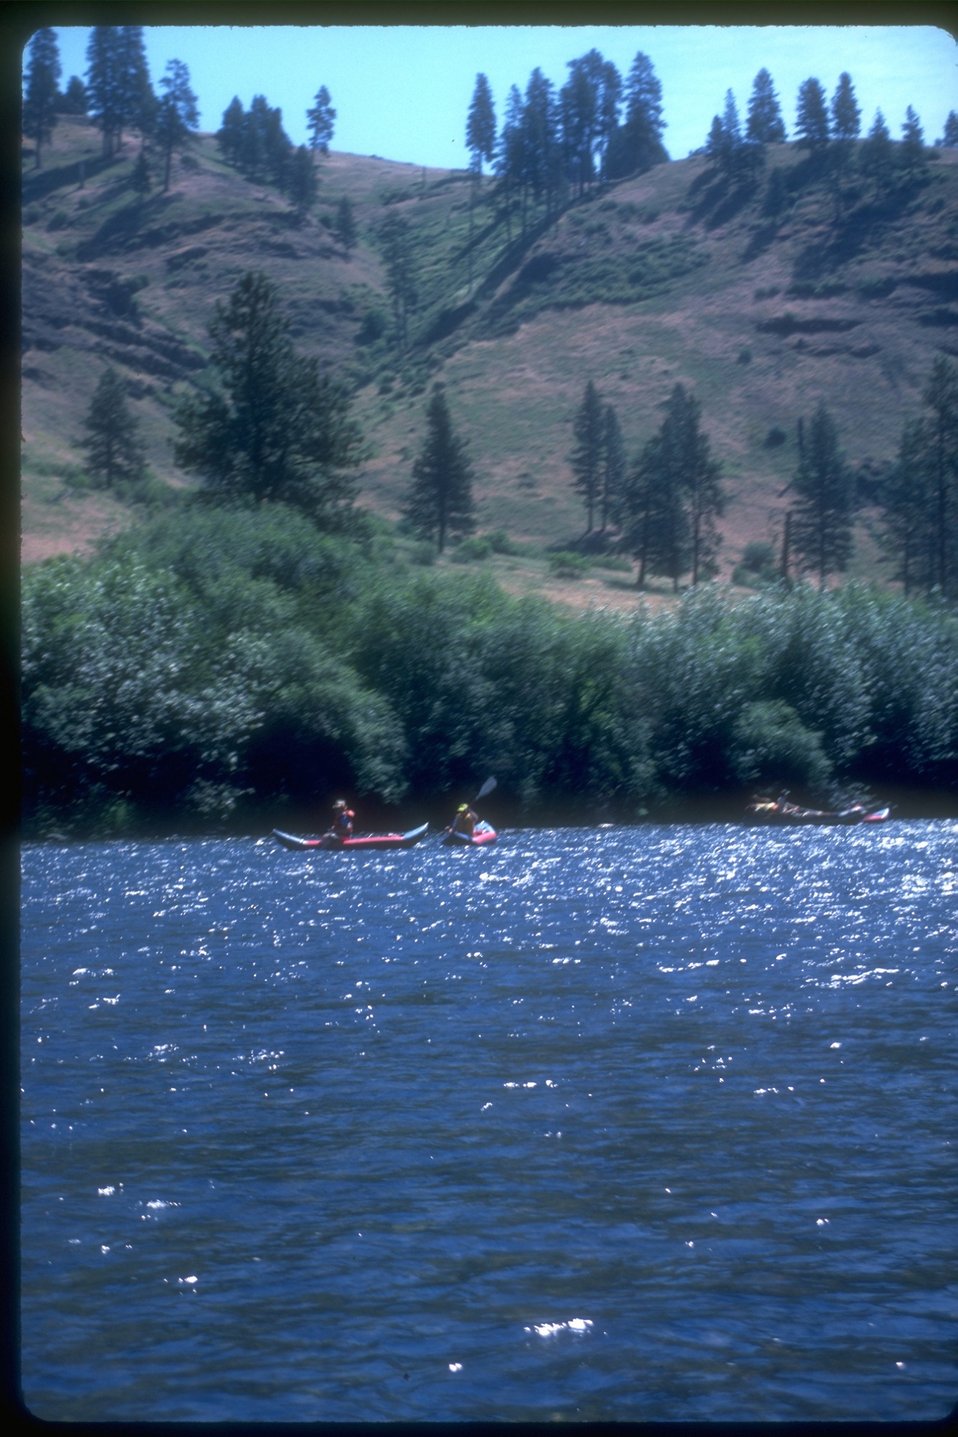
Kayakers use the Grand Ronde River for recreation.